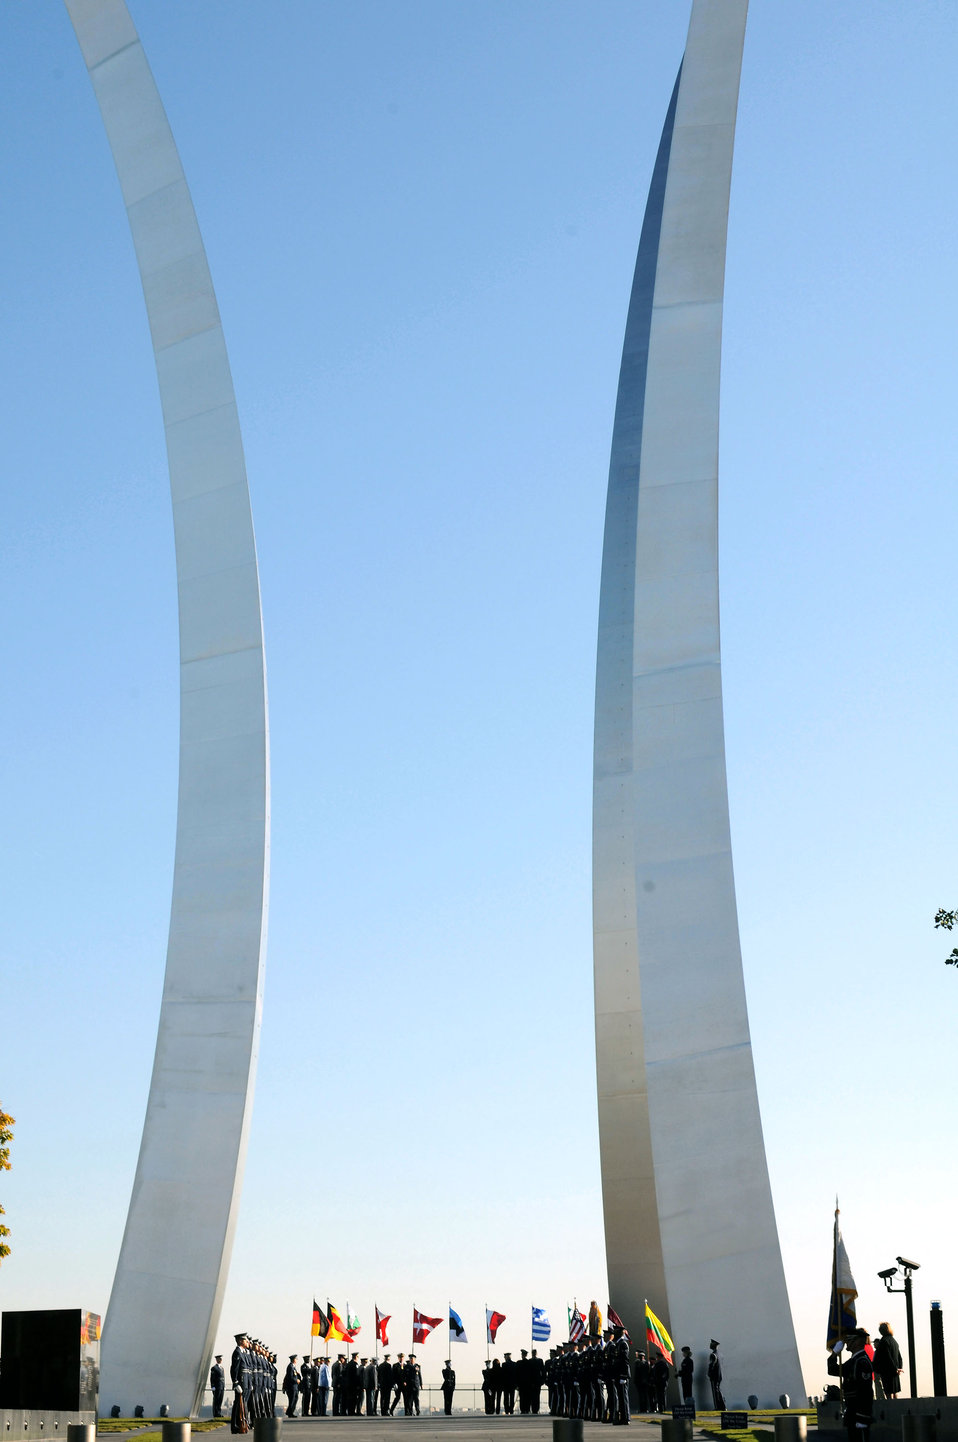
NATO air chiefs discuss common challenges, solutions

Members of the NATO Air Chiefs Conference participate in a wreath-laying Ceremony at the Air Force Memorial Oct. 7 in Arlington, Va. NATO air chiefs from 19 countries toured Air Force facilities during their visit.